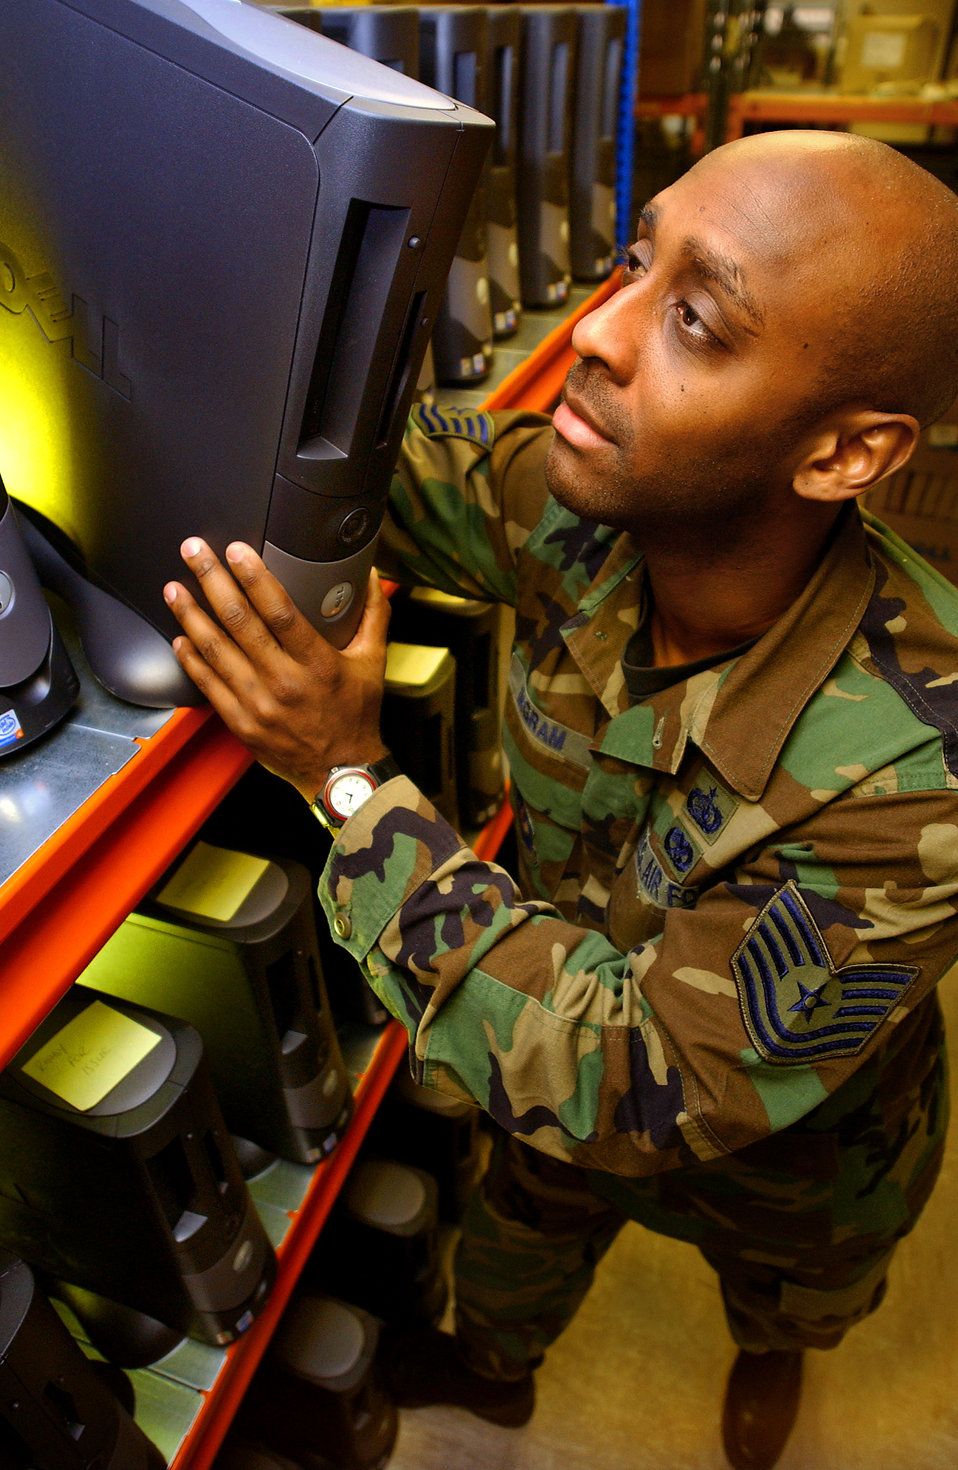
Out with the old ...

ROYAL AIR FORCE FAIRFORD, England -- Tech. Sgt. Michael Ingram moves a new computer from a warehouse shelf to replace an obsolete model here April 20. Sergeant Ingram is an assistant noncommissioned officer in charge of computer support with the 424th Communications Squadron.